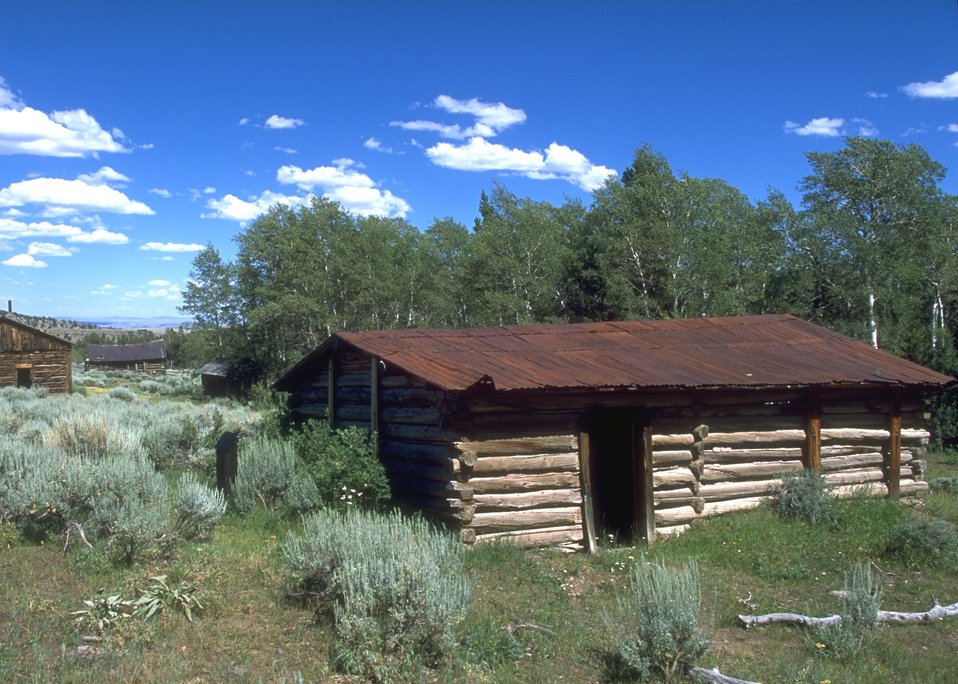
Structures at Miners Delight, Lander Field Office.